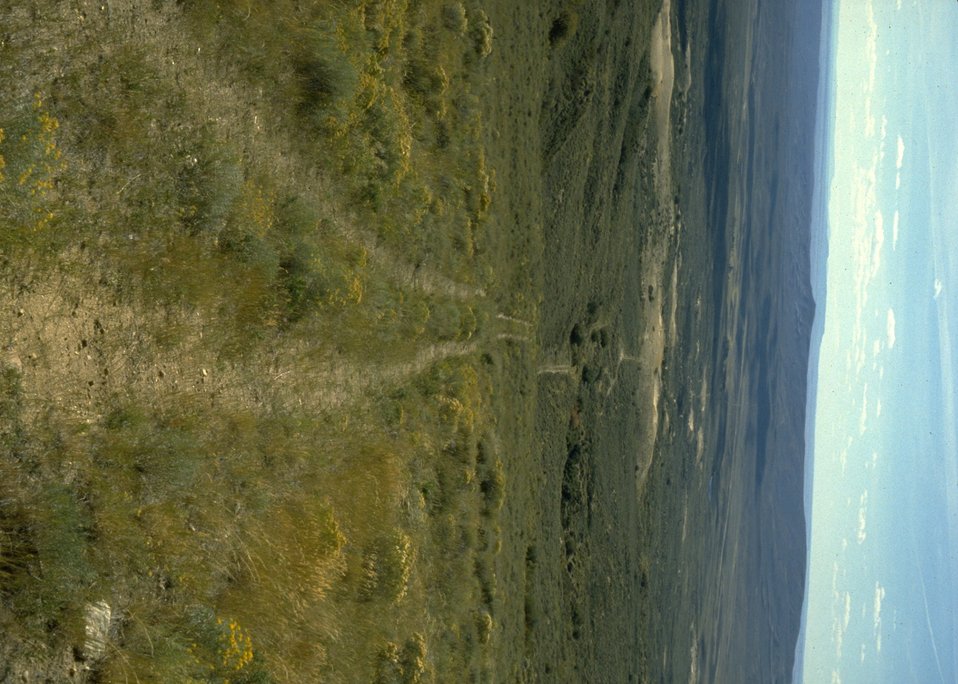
Two track with sand dunes.